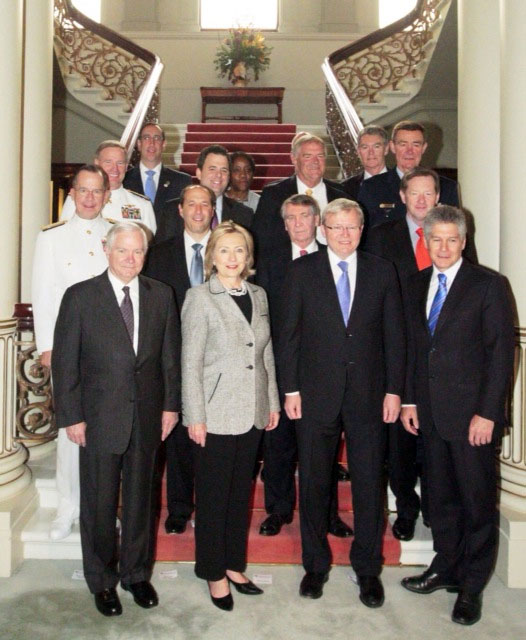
Secretary Gates, Secretary Clinton, Australian Foreign Minister Rudd, Australian Defense Minister Smith, and the AUSMIN Participants Pose for a Photo

The AUSMIN participants pose for a class photo on the staircase in Government House in Melbourne, Australia, on November 8, 2010. Individuals in the photo include: (front row: right to left) U.S. Secretary of Defense Robert Gates, U.S. Secretary of State Hillary Rodham Clinton, Australian Foreign Minister Kevin Rudd, and Australian Defense Minister Stephen Smith.